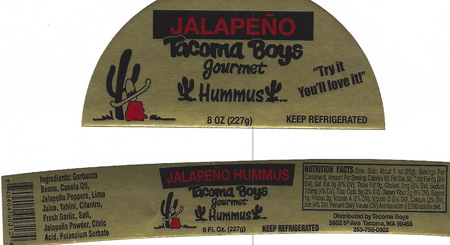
RECALLED – Hummus

July 16, 2013 – Product Recall – Hagee Foods Inc. dba Penny's Salsa Inc. Recalls Hummus Products Because of Possible Health Risk.